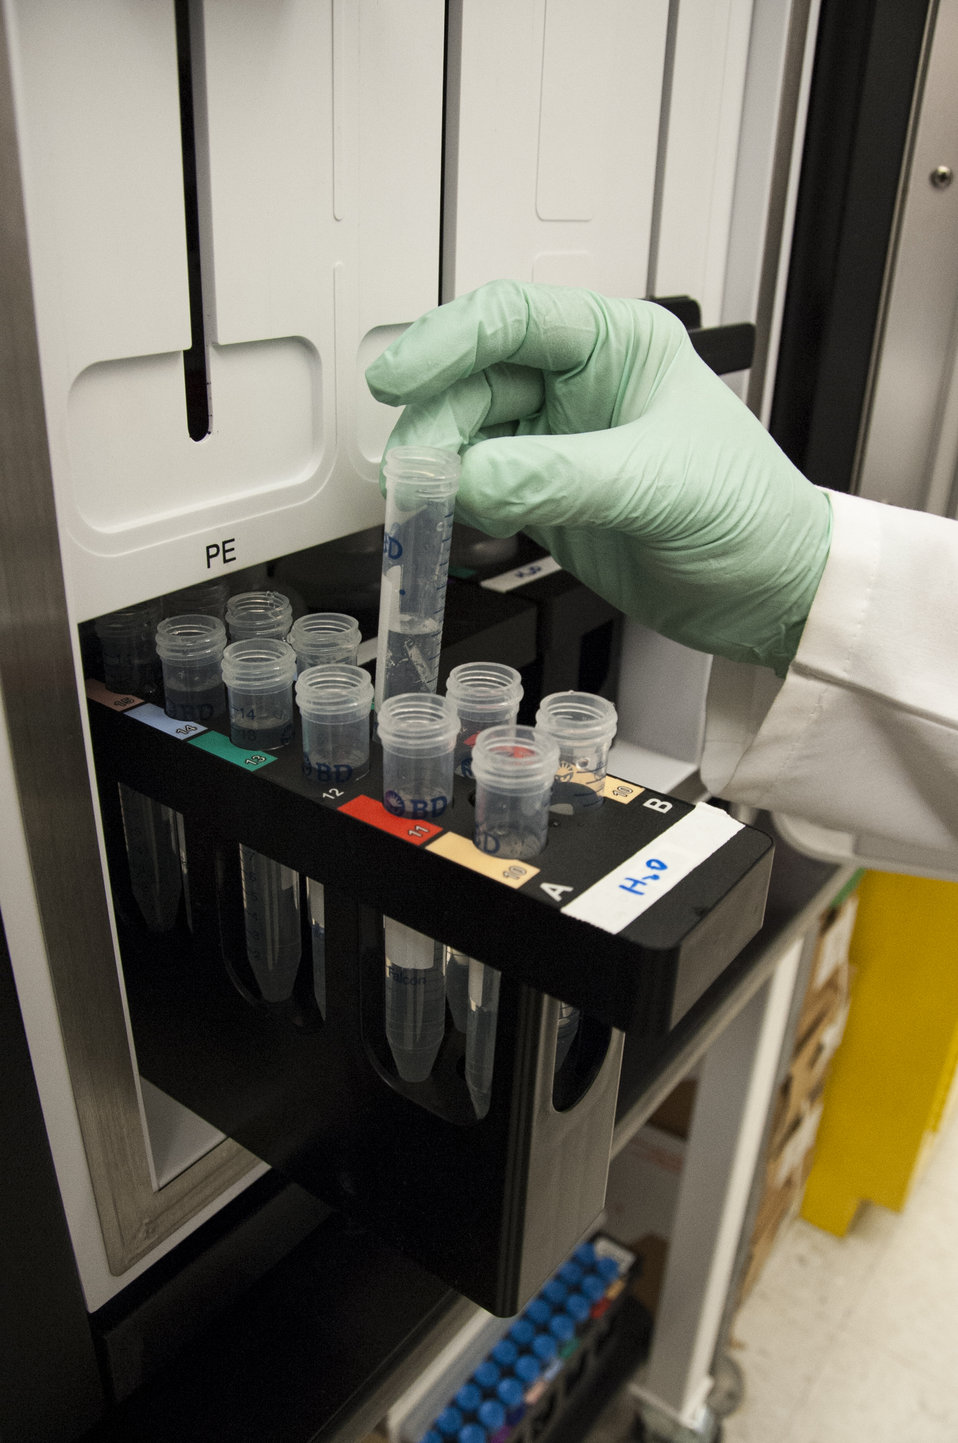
Bio Threats: FDA's A-Team (6326)

Zuben Sauna, Ph.D., principal investigator in CBER’s hemostasis laboratory, and chemist Wells Wu, Ph.D., are exploring the shapes of proteins used in medical treatments to determine why they prompt a strong reaction from the body’s immune system. Suspecting that the shapes may be part of the problem, the researchers are using tiny pieces of DNA-like molecules called aptamers to probe the proteins. Hemostasis is the process of getting bleeding to stop and the antibodies that cling to these proteins are causing life-threatening complications, particularly in the treatment of bleeding disorders.

Scientists at FDA’s Center for Biologics Evaluation and Research (CBER) work to facilitate the development of safe, effective treatments that would neutralize biological threats to public health and security. CBER regulates preventive and therapeutic vaccines, blood and blood products, human cell and tissue-based products, gene therapies and xenotransplantation. To learn more, read this FDA Consumer Update:

• FDA Teams Prepare for Biological Threats